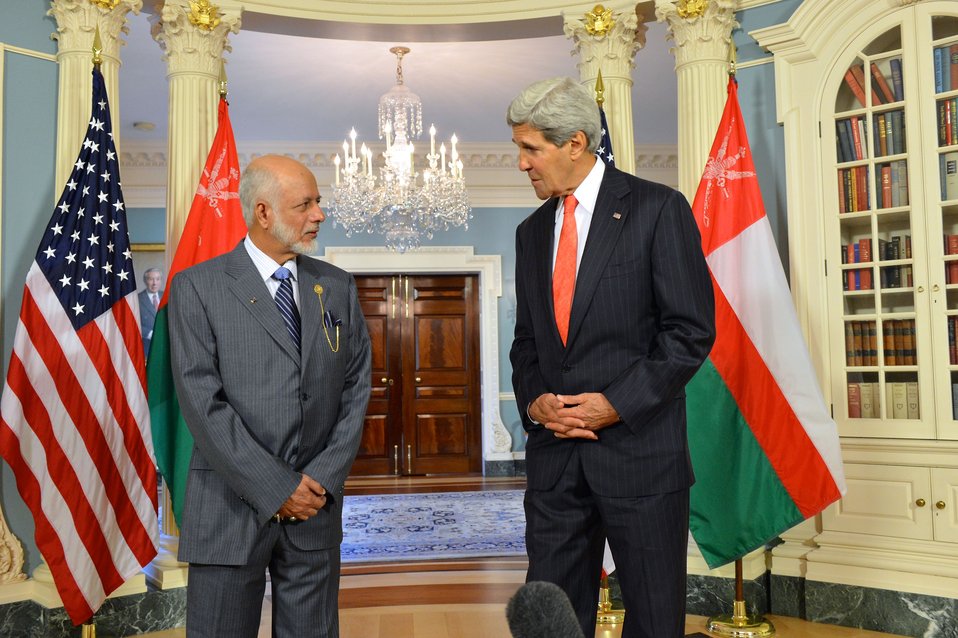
Secretary Kerry and Omani Foreign Minister Yusuf bin Alawi bin Abdullah Address Reporters

U.S. Secretary of State John Kerry and Omani Foreign Minister Yusuf bin Alawi bin Abdullah address reporters at the U.S. Department of State in Washington, D.C., on June 20, 2014.